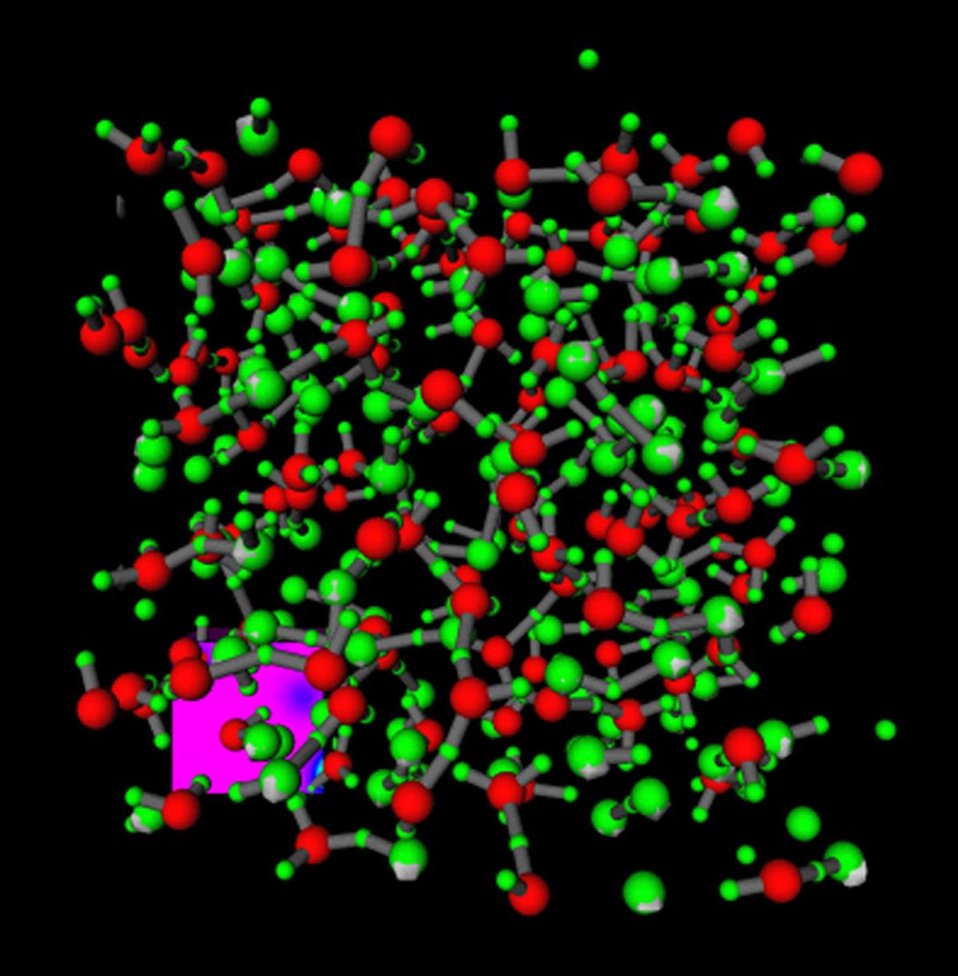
JEEP MOLECULAR DYNAMICS CALCULATIONS ADDS TO UNDERSTANDING THE PERFORMANCE OF INSENSITIVE HIGH EXPLOSIVES.

JEEP MOLECULAR DYNAMICS COMPUTES INTERACTIONS AT QUANTUM-MECHANICAL LEVEL. THIS CALCULATION INVOLVING 600 ATOMS WITH 1920 ELECTRONS, USING ABOUT 3840 PROCESSORS ON ASCI (ACCELERATED STRATEGIC COMPUTING INITIATIVE) WHITE IS PROVIDING CRUCIAL INSIGHT INTO MESO-SCALE PHENOMENON THOUGH SIMULATIONS OF SYSTEMS UTILIZING HIGH-FIDELITY MICRO-SCALE PHYSICS.